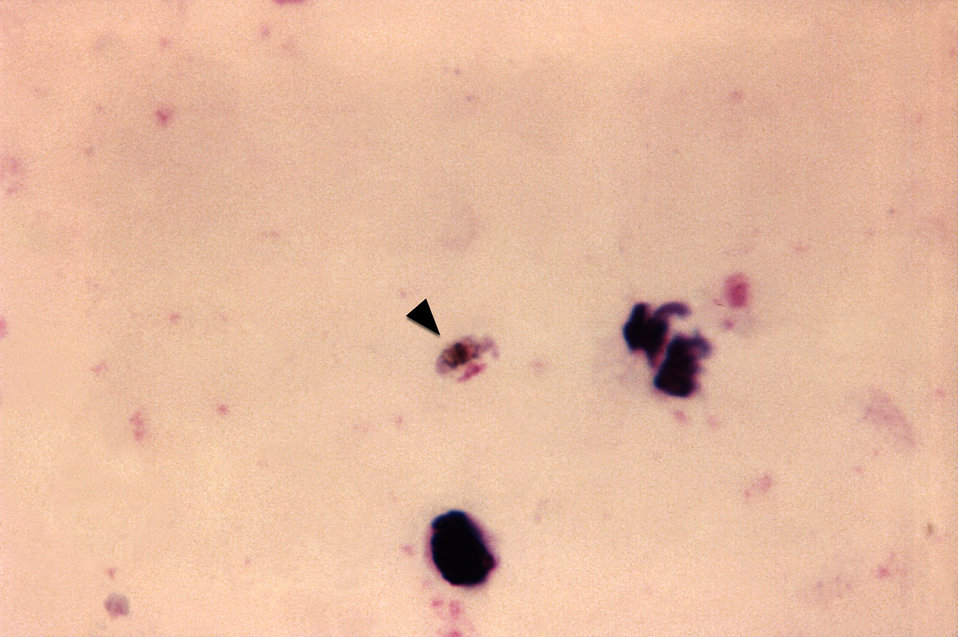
This thick film Giemsa stained micrograph reveals a P. falciparum gametocyte (Arrow).